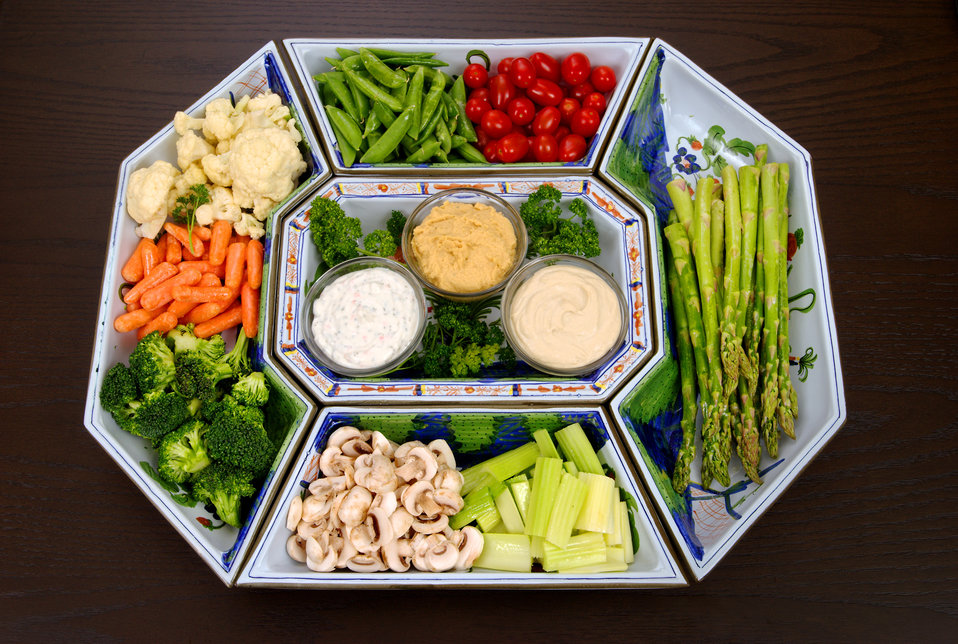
This vegetable platter includes some very healthy ingredients including snow peas, cherry tomatoes, asparagus, celery, mushrooms, broccoli, carrots, and cauliflower. Three different fat-free, low-salt dips are also added for a variety of flavors: ranch, honey mustard, and horseradish. These are all nutrient-dense, anti-oxidant-rich foods, packed with vitamins and minerals.